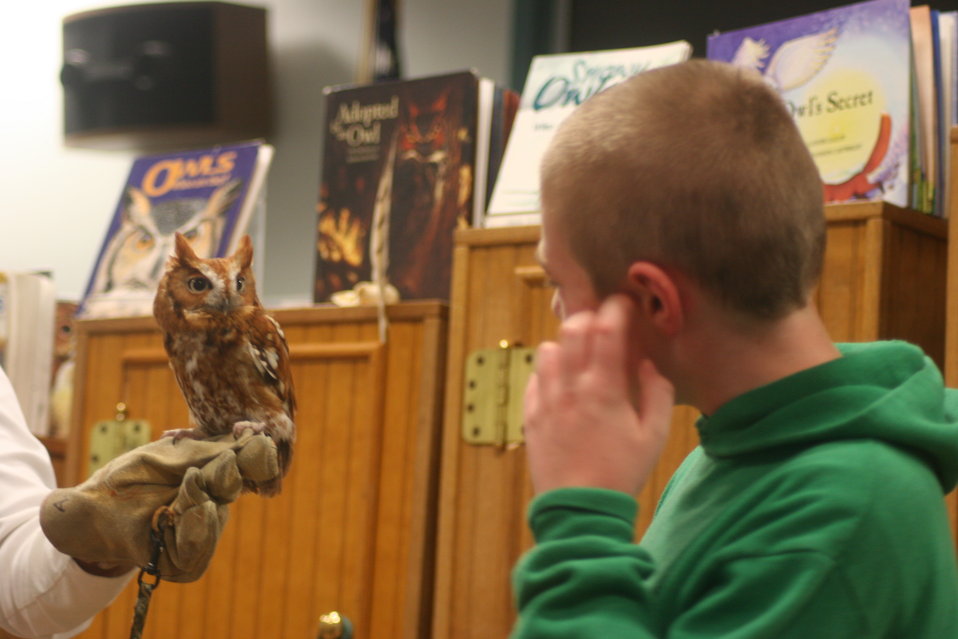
Screech Owl

Live bird demonstration